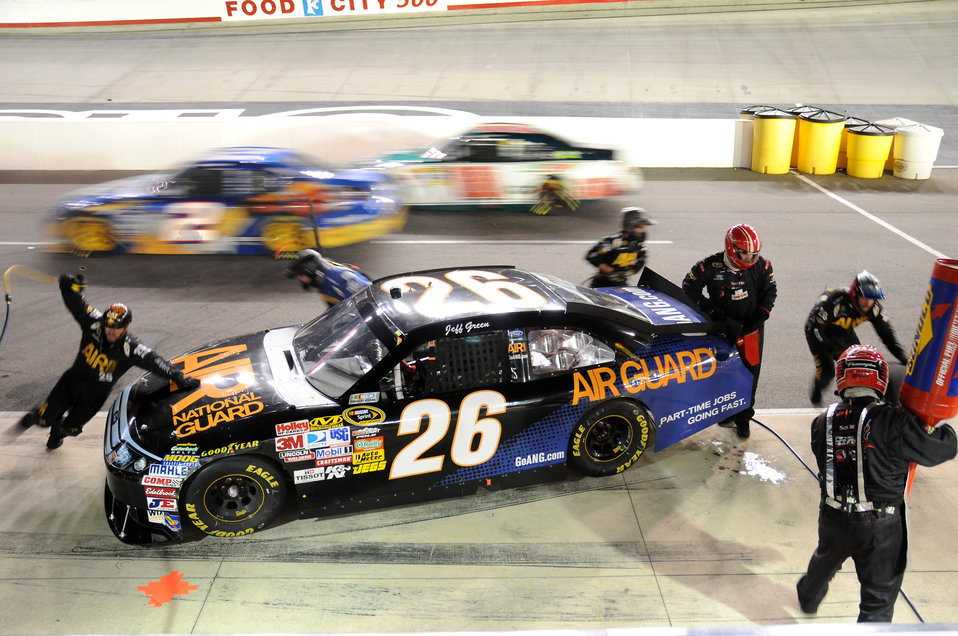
The Air National Guard's car #26

The Air Guard's #26 car driven by Jeff Green and owned by Latitude 43 Motorsports is scheduled to race in the Air Guard 400 at Richmond International Speedway on Sept. 11, 2010.